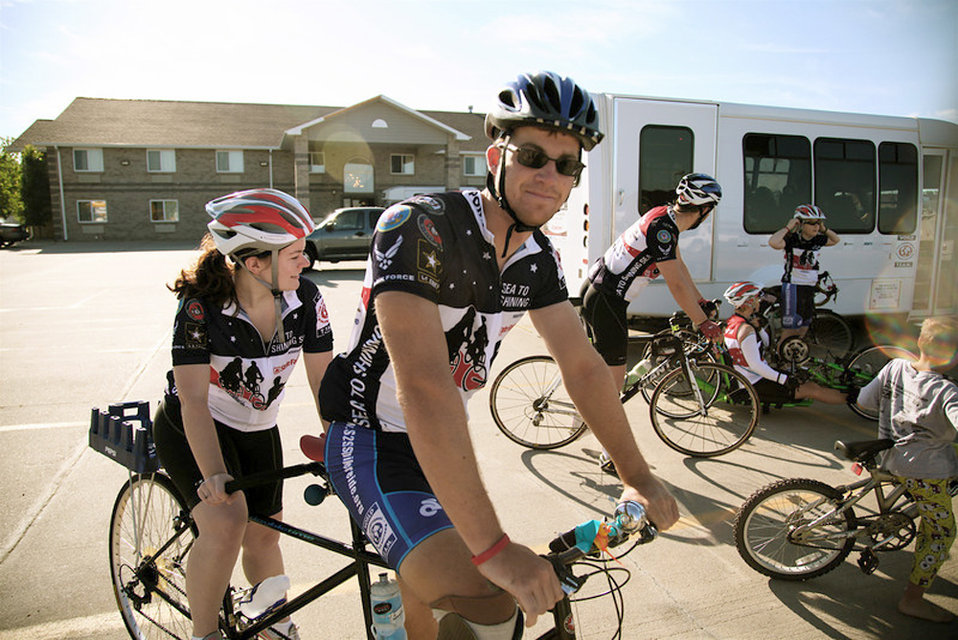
Cancer survivor takes on open road

Senior Airman Brian Petras is participating in the Sea to Shining Sea ride hosted by World T.E.A.M. Sports and sponsored by State Farm. The team of 20 riders is composed of primarily wounded, ill, or injured servicemembers cycling across the U.S. The ride started in San Francisco, Calif., and is scheduled to end July 24, 2010, at Virginia Beach, Va. Airman Petras is from the 50th Airlift Squadron at Little Rock Air Force Base, Ark.